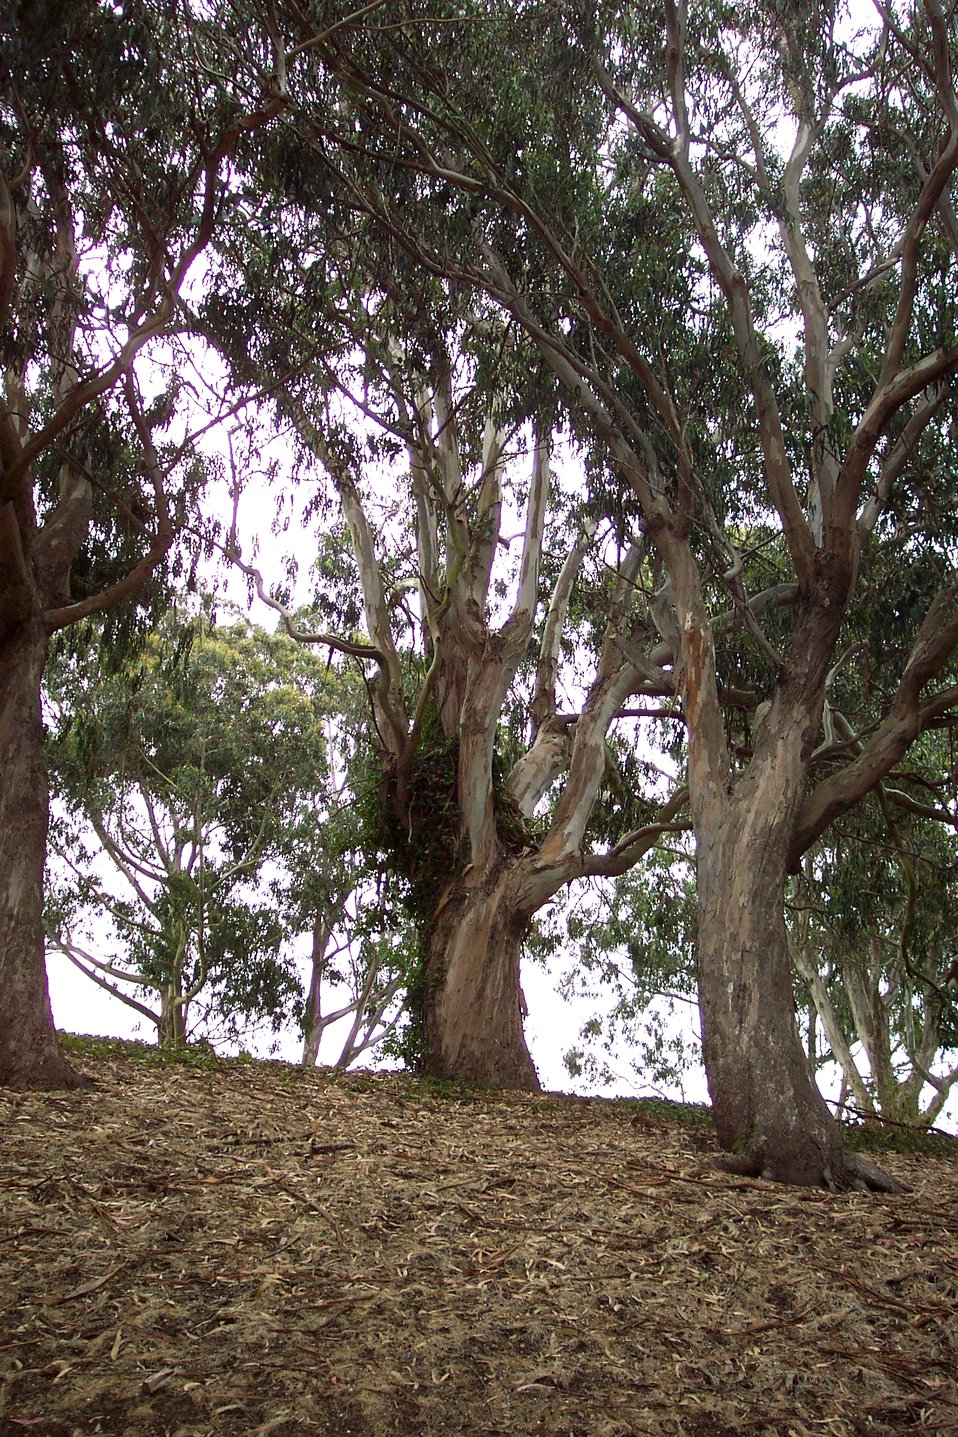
Huge eucalyptus trees at Fort Mason.